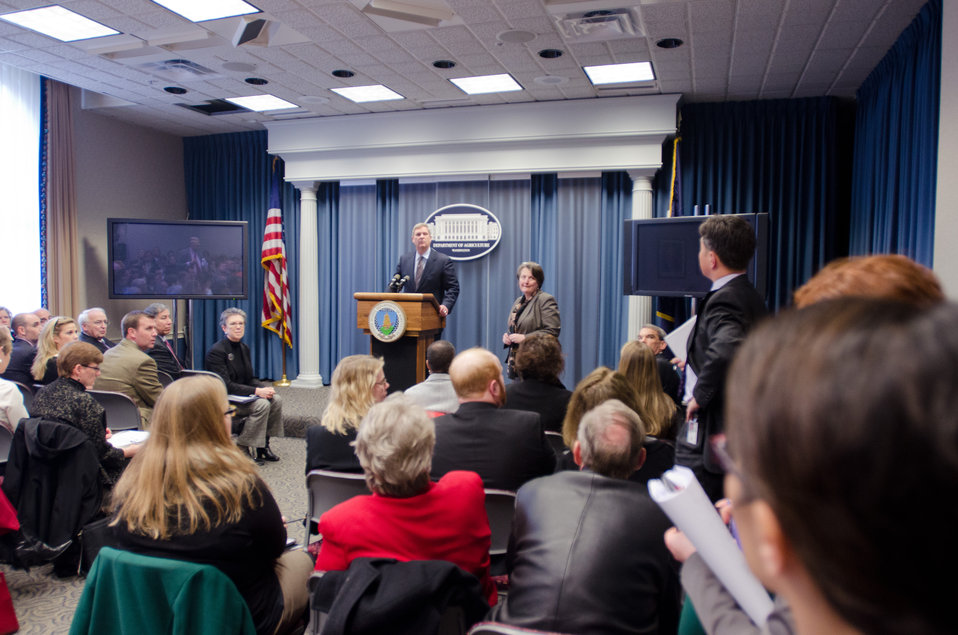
Agriculture Secretary Tom Vilsack (center) and Deputy Agriculture Secretary Kathleen Merrigan (right) respond to a stakeholder during a question and answer period about the Agriculture FY2013 budget at the Department of Agriculture, in Washington, D.C., on Monday, Feb. 13, 2012.